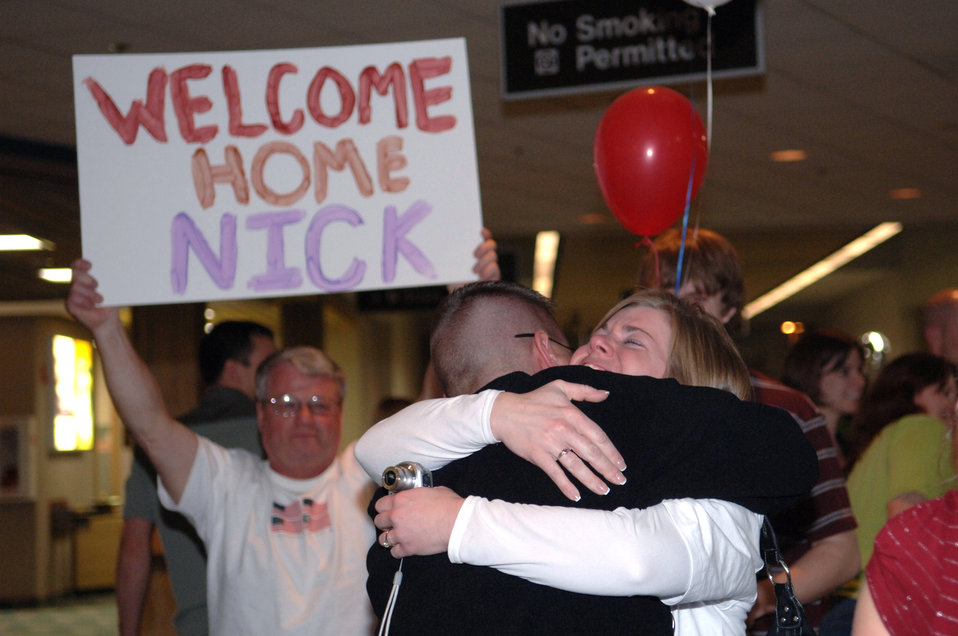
Welcome home to South Dakota

Staff Sgt. Nick Shatek is greeted by his sister Jill Petersen and family at Rapid City Regional Airport March 21. Sergeant Shatek, assigned to the 28th Security Forces Squadron, returned from a deployment to Southwest Asia in support of operations Iraqi Freedom and Enduring Freedom.